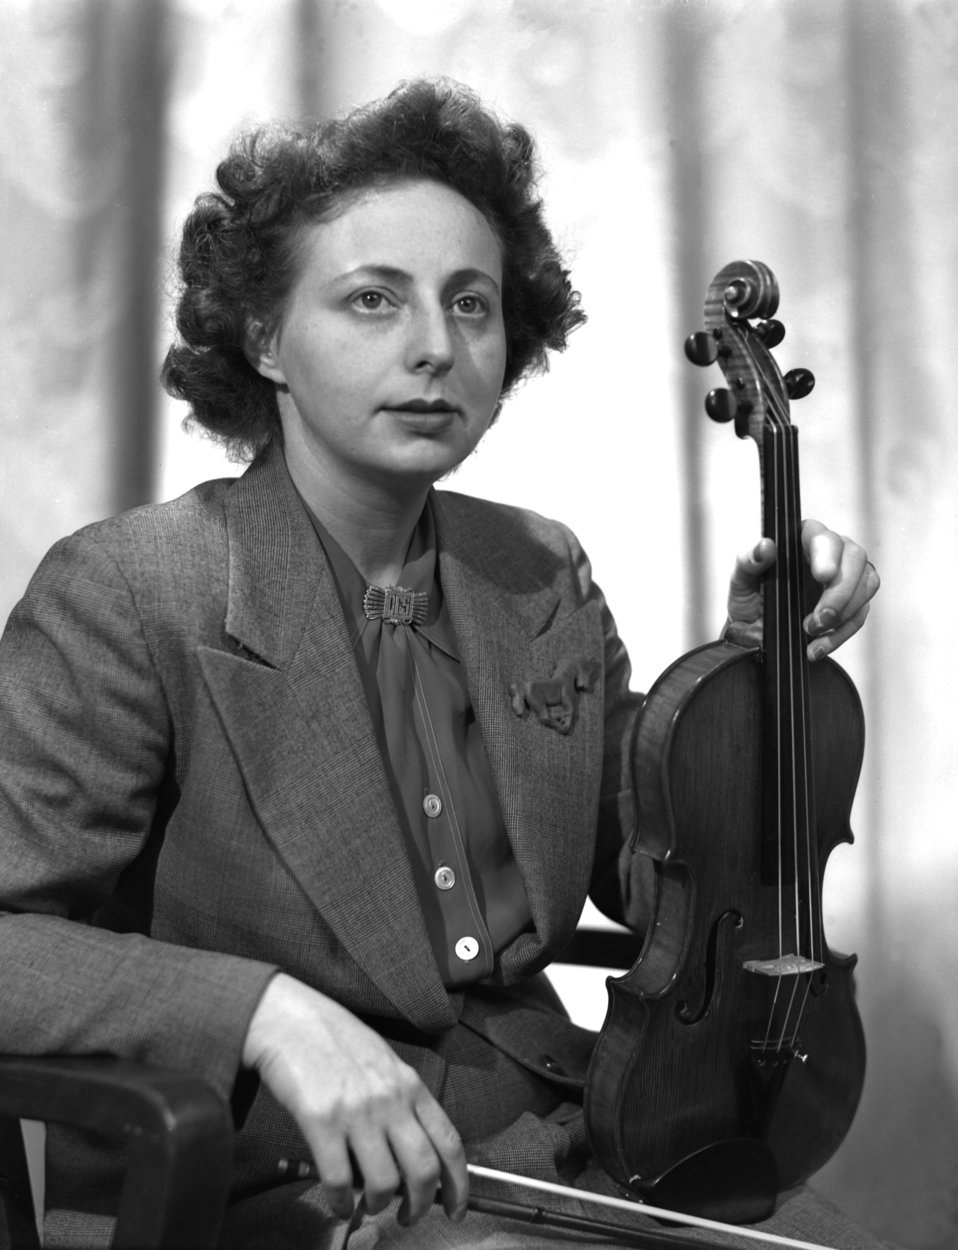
Dorothy Silver Oak Ridge Symphony

3241-2 DOE photo Ed Westcott Oak Ridge Tennessee